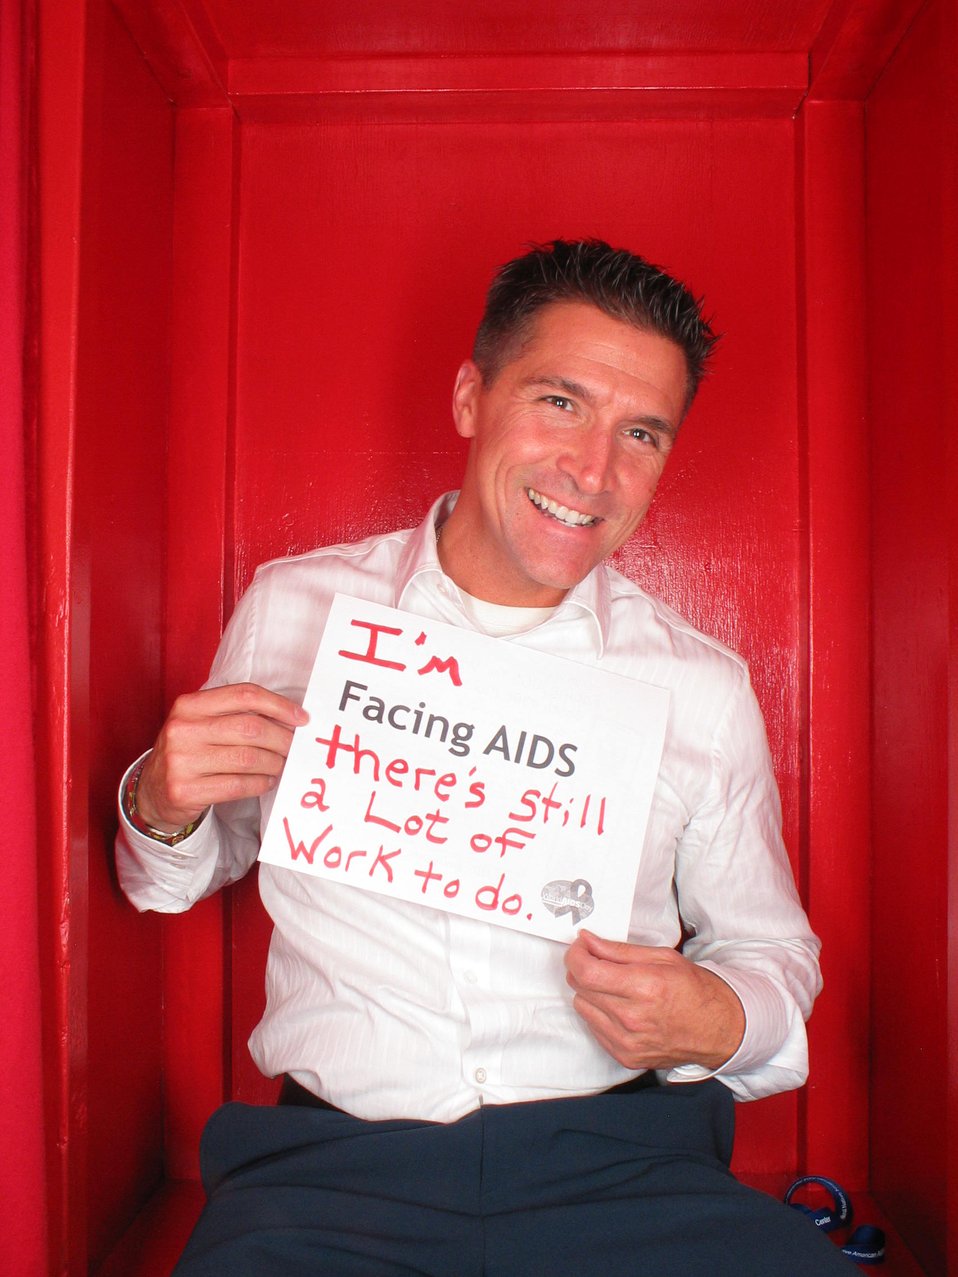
I'm Facing AIDS there's still a lot of work to do.